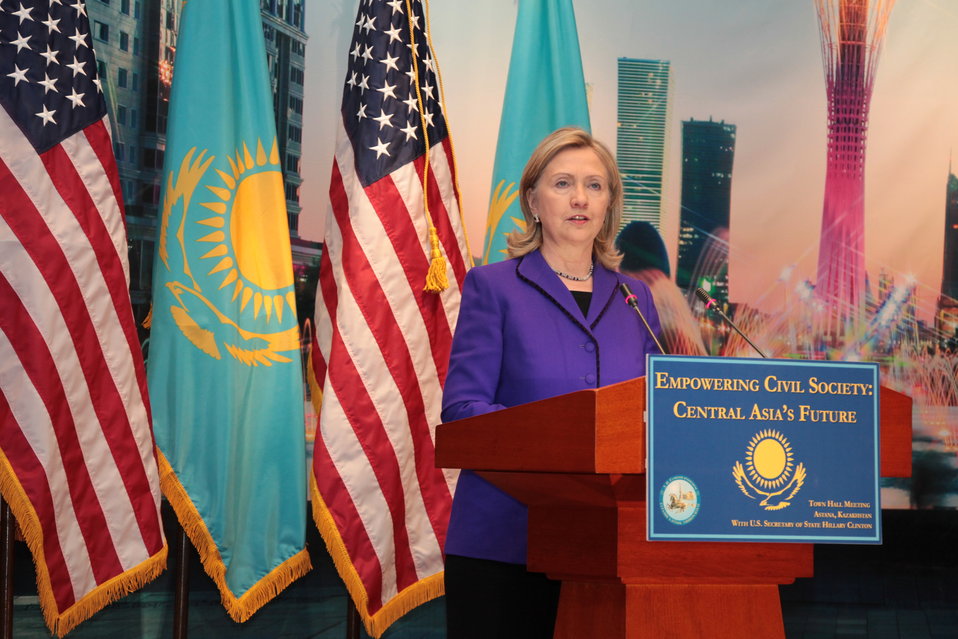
Secretary Clinton Responds to a Question

U.S. Secretary of State Hillary Rodham Clinton responds to a question at a town hall on “Empowering Civil Society for Central Asia’s Future” in Astana, Kazakhstan, on November 30, 2010.